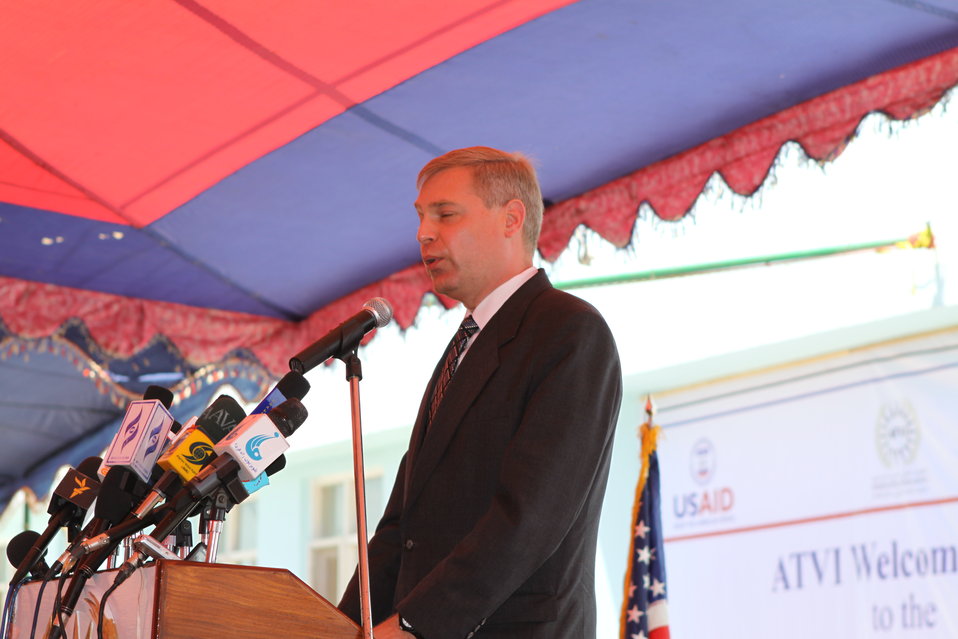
100522 ATVI Graduation 102